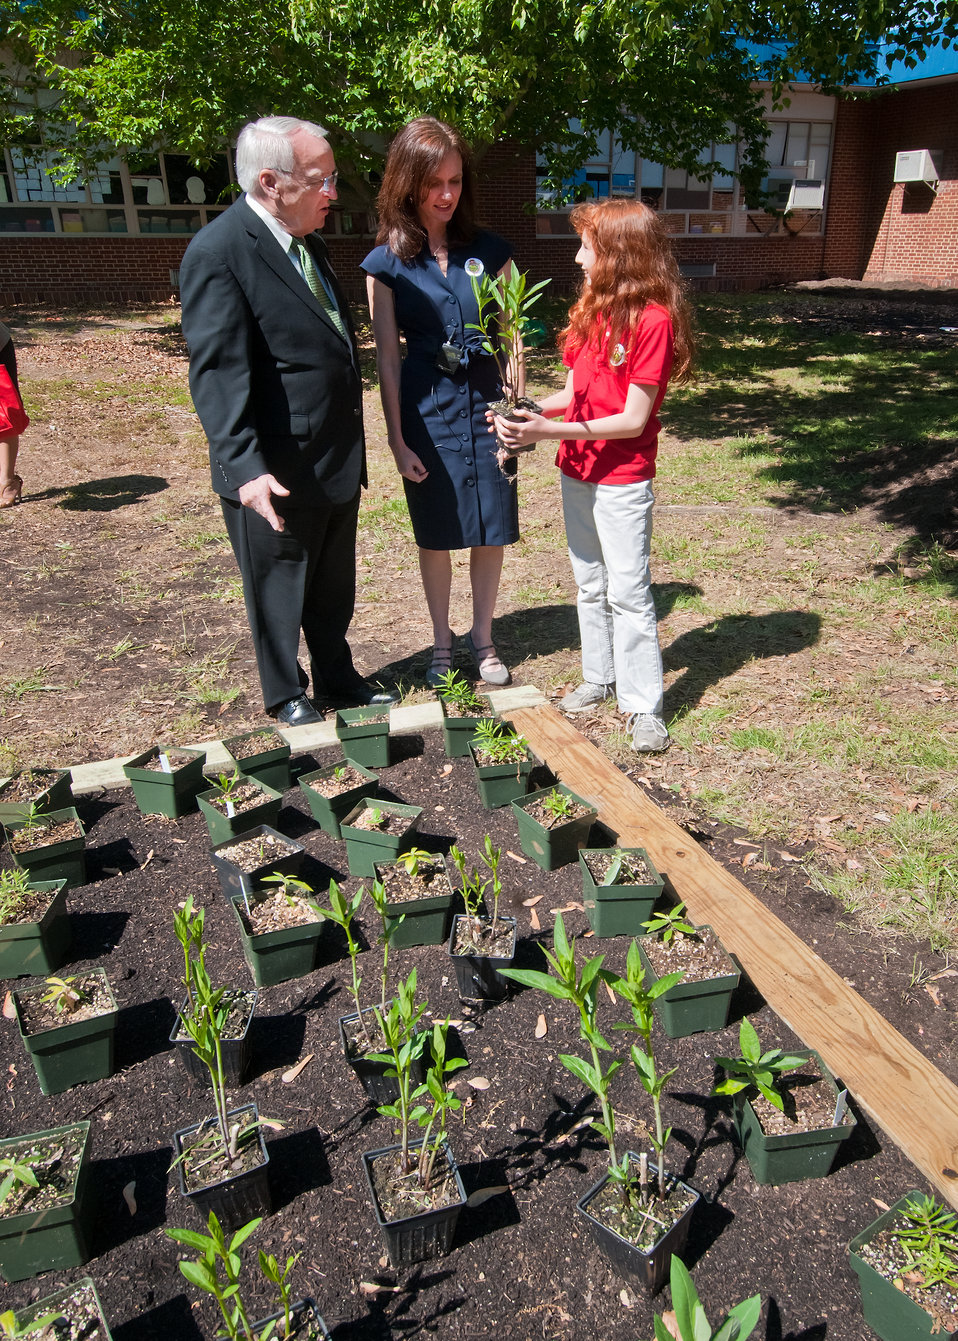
Kevin Concannon (left), Under Secretary, Food Consumer and Nutrition Services, Dr. Elisabeth Hagen (center), Under Secretary, for Food Safety and Emily Wise (right), a fifth grade student at Maryland City Elementary School in Laurel, MD, discuss the plants native to Maryland that will be going into the school garden. Undersecretary Concannon and Undersecretary Hagen were at Maryland City Elementary for the USDA, Food Safety Inspection Service, Food Safety Education Camp on Thursday, May 5, 2011. USDA Photo by
Bob Nichols.